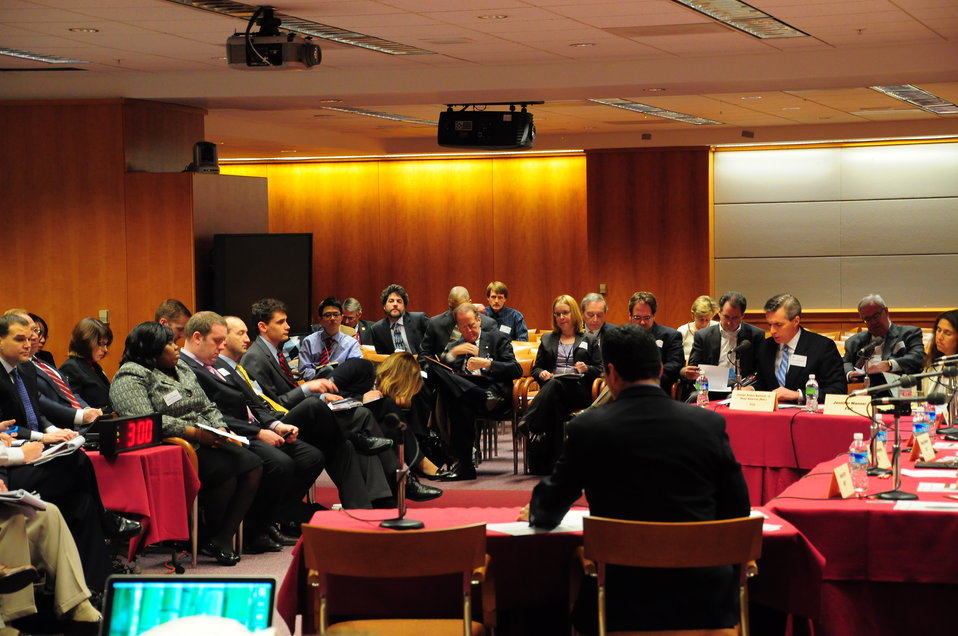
FCC ERIC Public Safety Workshop

ERIC: Public Safety Workshop; Commission Meeting Room; March 02, 2010